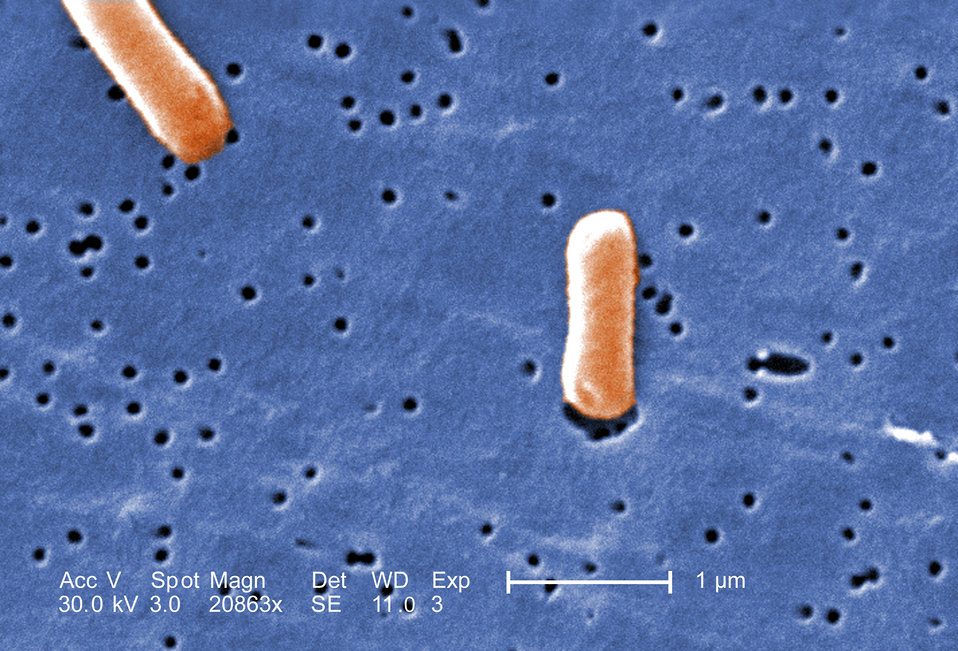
At a magnification of 20863X, this colorized scanning electron micrograph (SEM) revealed two Gram-negative bacilli, or rod-shaped Salmonella sp. bacteria. The genus Salmonella is a member of the taxonomic family, Enterobacteriaceae, and approximately 2000 serotypes of this genus are known to cause disease in human beings. See PHIL 10566 for a black and white version of this image.What sort of germ is Salmonella?